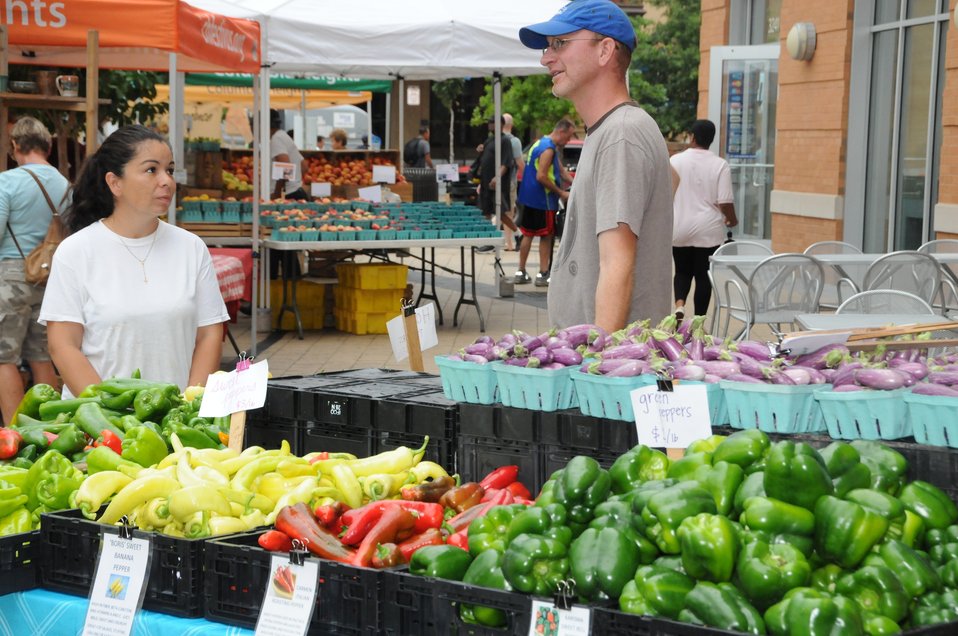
Vendors Before Market

Vendors at the Columbia Heights Community Marketplace.